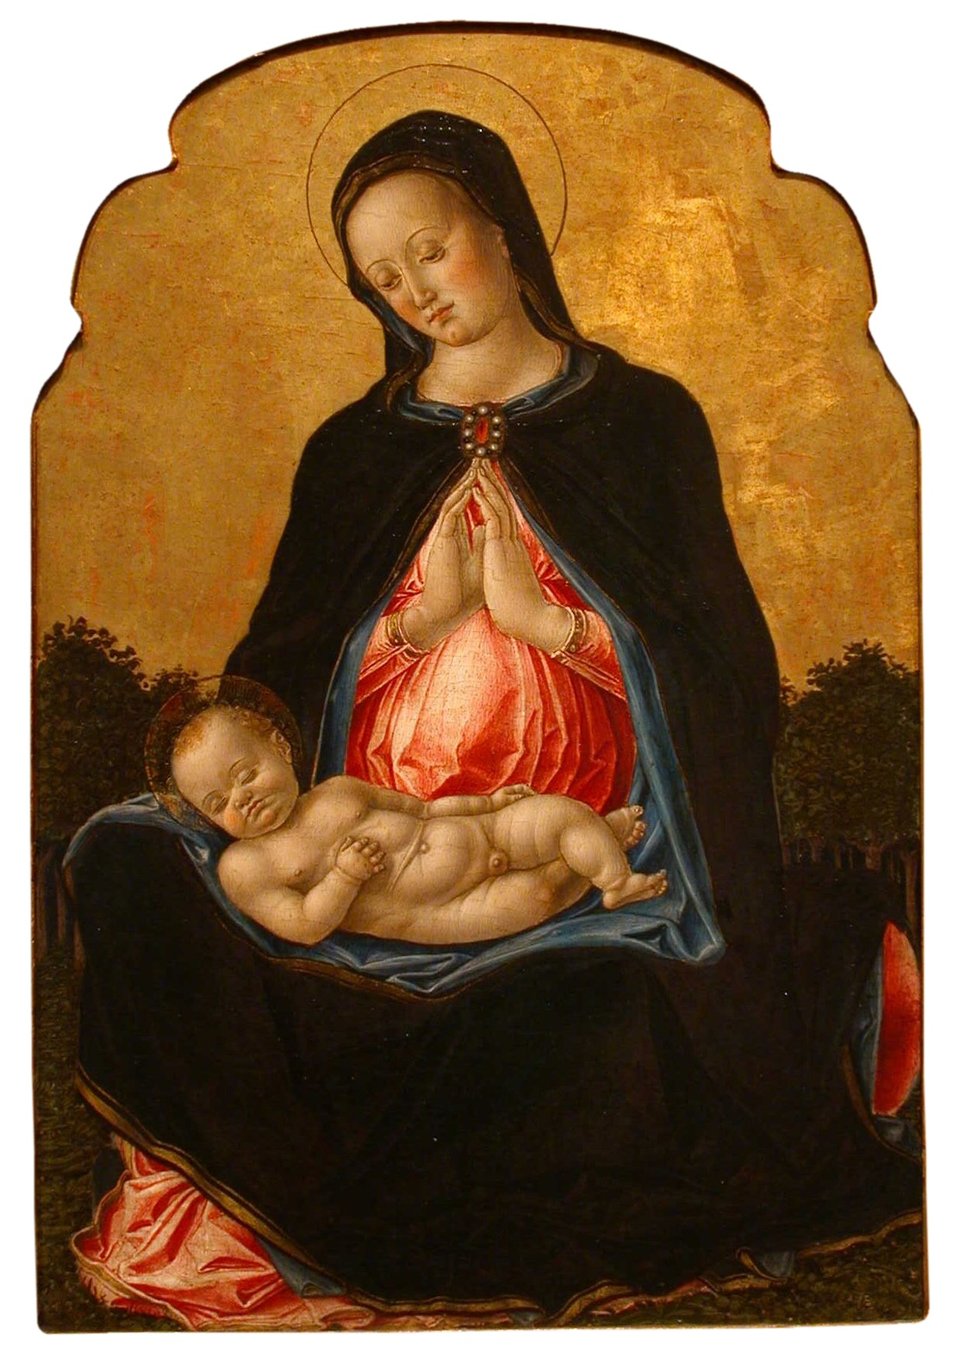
'Madonna and Child', tempera and gold on panel painting by Bartolomeo Vivarini, ca. 1475